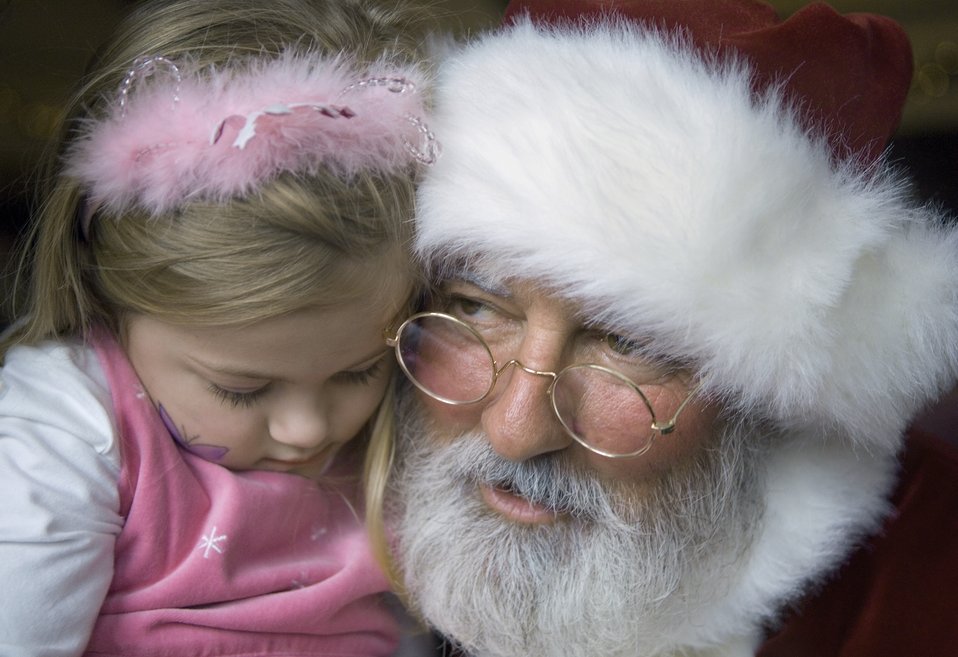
Santa brings holiday cheer to Arnold party

Santa whispers to a young girl during the Christmas party Dec. 2 at Arnold Air Force Base, Tenn.